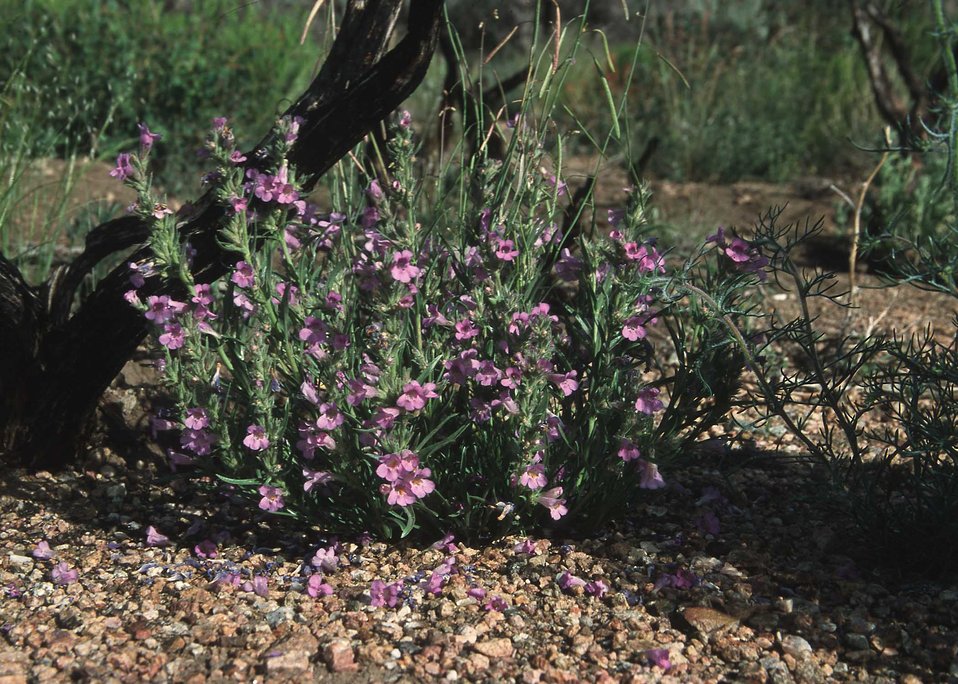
Mimulas spp. Wildflower.